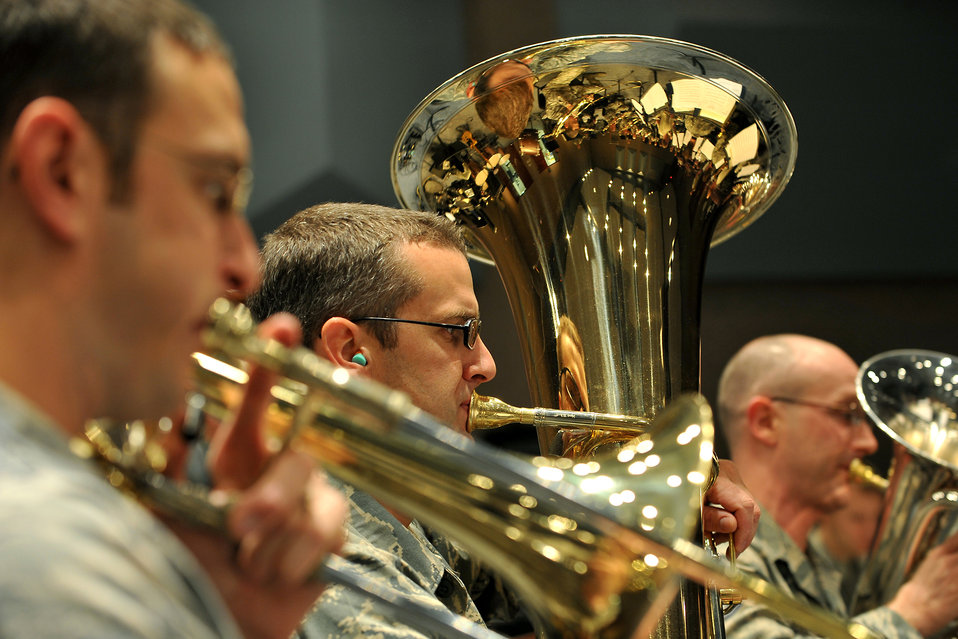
Heartland of America Band

Staff Sgts. Matt Erickson and Mark Barnette, both with the Heartland of America Band, rehearse Nov. 24, 2009, at Offutt Air Force Base, Neb. The band performs a broad range of musical styles ranging from classic to contemporary, jazz to country and pop to rock. The various components of the band perform tour extensively throughout a 680,000 square mile, eight-state area.